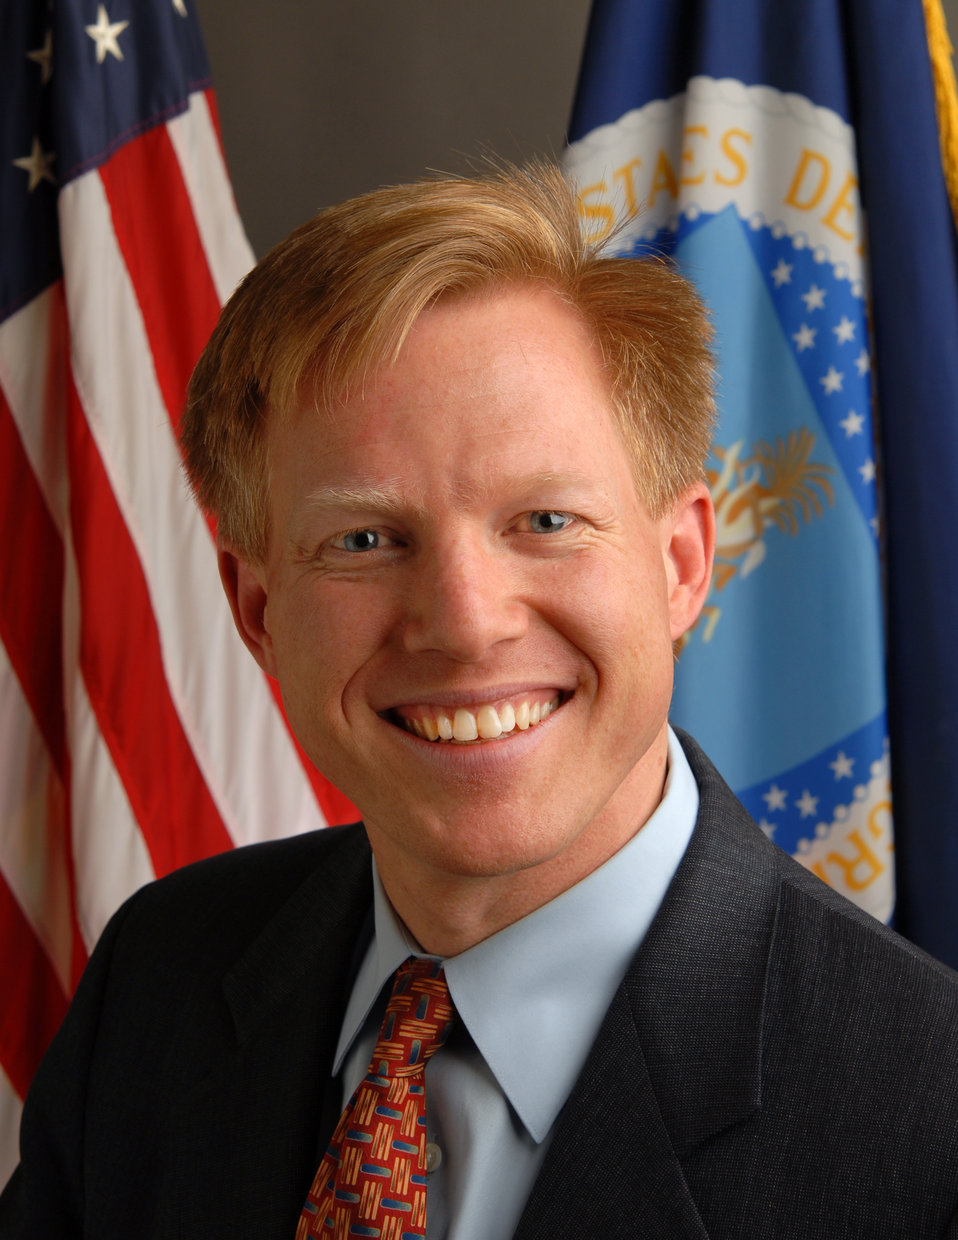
20120125-FBNP-KJH-0003 Director Faith-Based and Neighborhood Partnerships Max Finberg

Director Faith-Based & Neighborhood Partnerships Max Finberg.